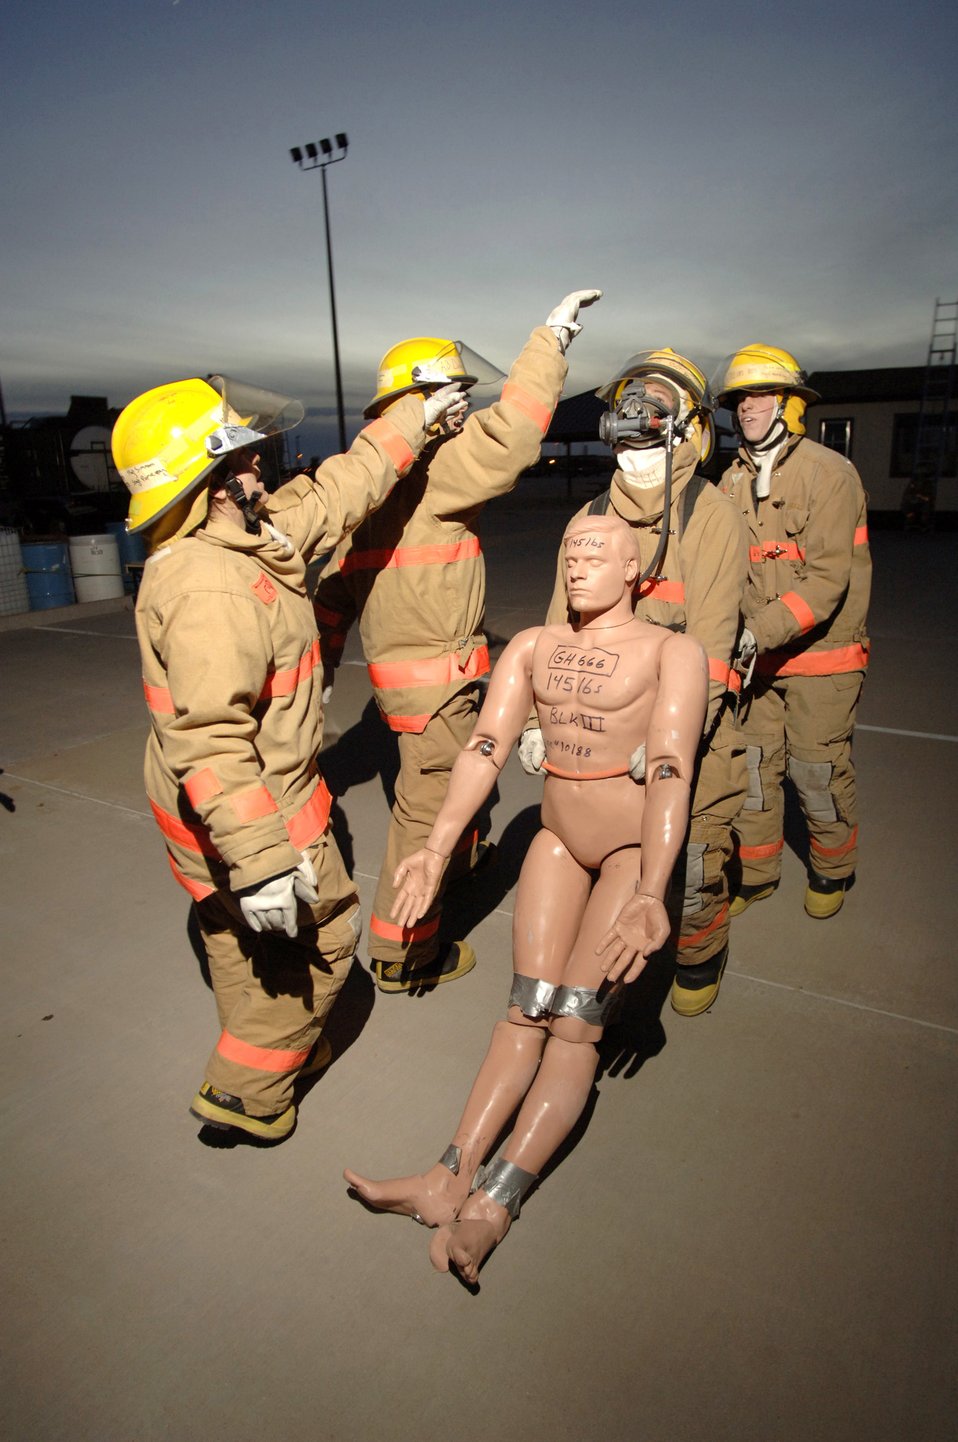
If you can't stand the heat...

GOODFELLOW AIR FORCE BASE, Texas (AFPN) -- Airman Basic Tyler Wells drags a rescue dummy 100 feet as part of the fireman's physical training evaluation. The entire evaluation must be completed in eight minutes.